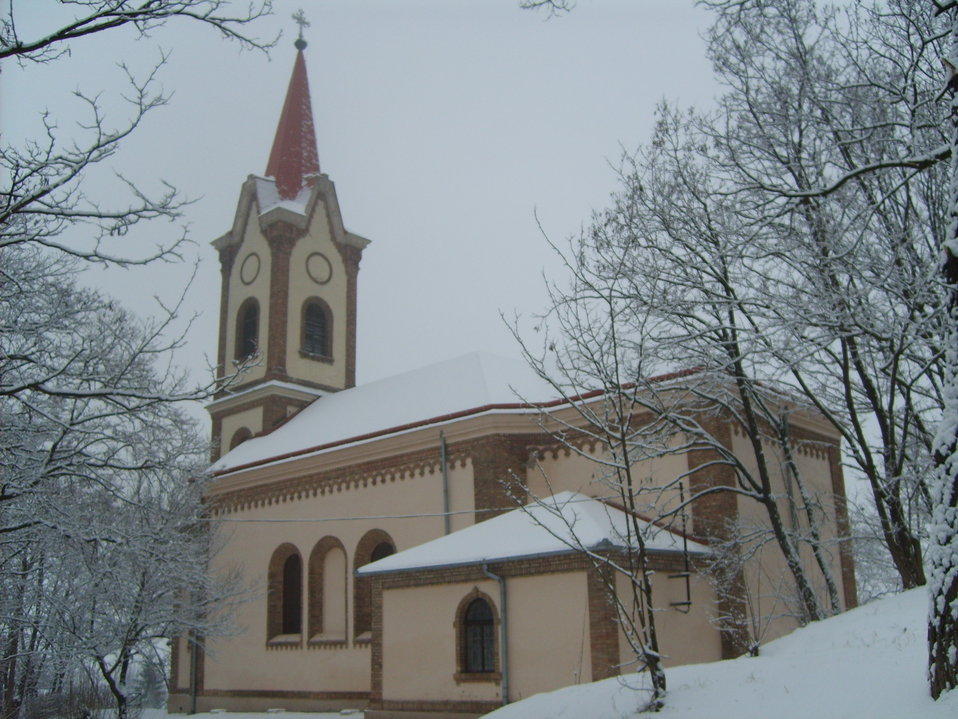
Magyar: Sajónémeti római katolikus templom